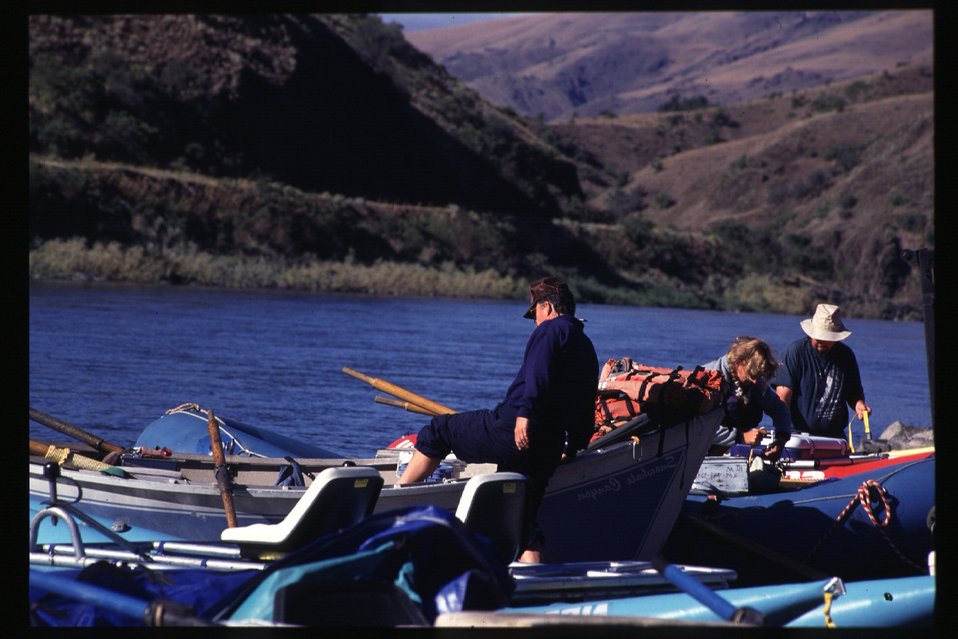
Boat launch Dorys and rafts Lower Salmon River Cottonwood Field Office UCSC Upper Columbia Salmon Clearwater District